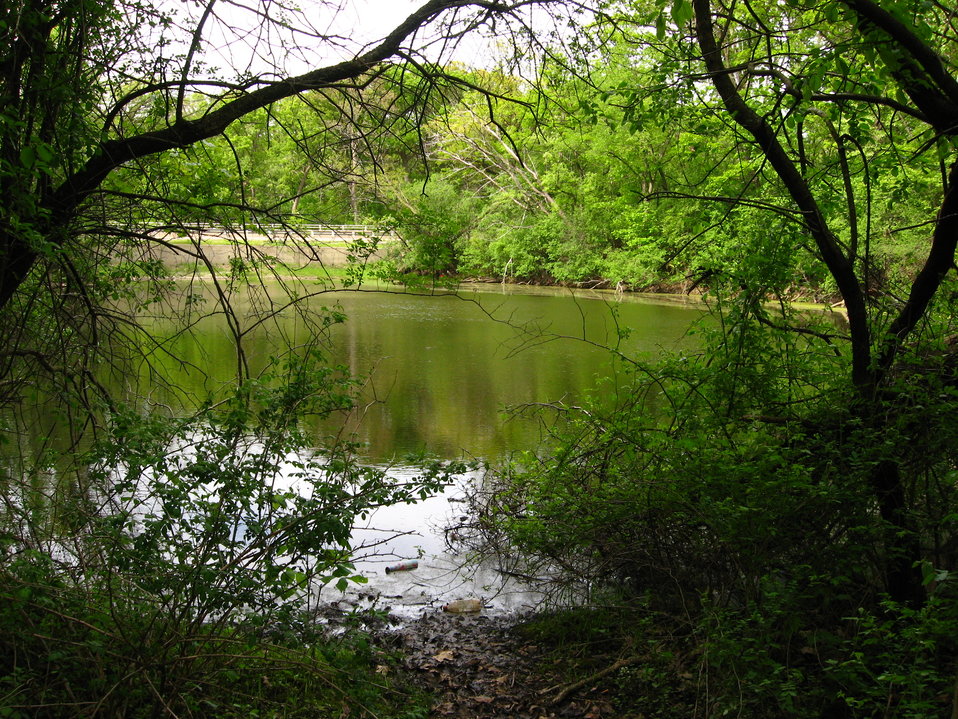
[:en:Bachelor's Grove Cemetery